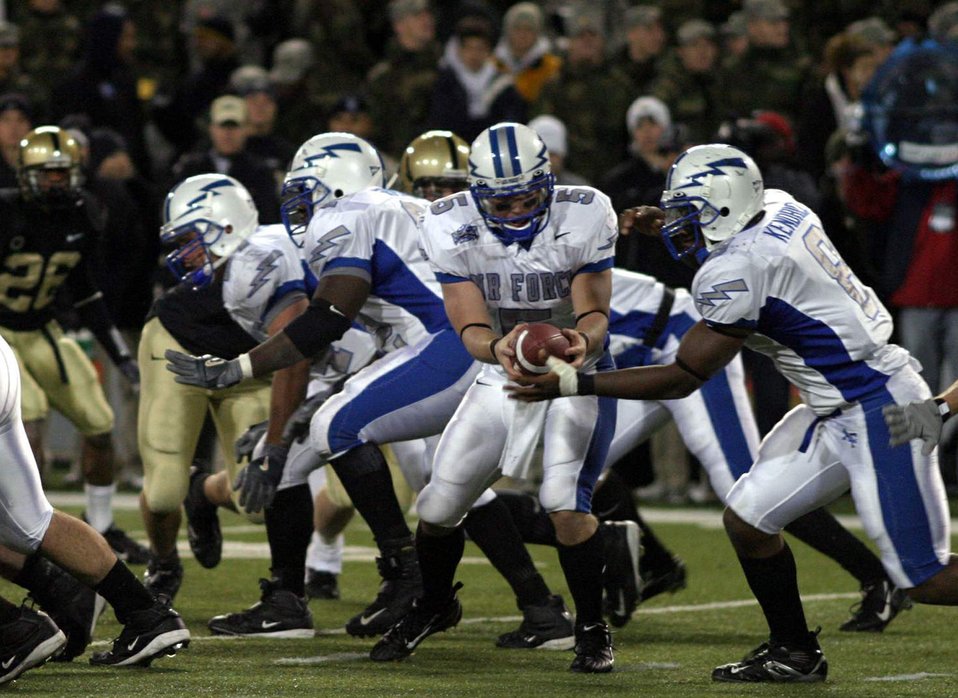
Army/Air Force football game

Air Force quarterback Shaun Carney hands off to fullback Jacobe Kendrick who eyes the offensive line moving Army back Nov.3 at West Point, N.Y., where Air Force prevailed 43-7.